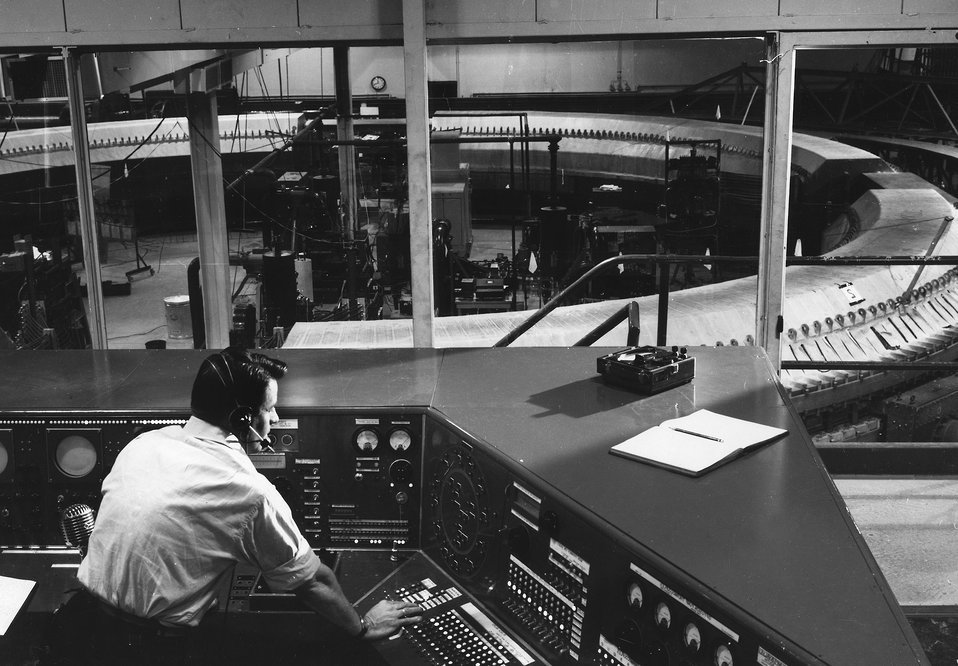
General view of the Cosmotron from the main control console. Equipment in the center of the ring is mainly vacuum gear. (Personnel - E. Maher). c. 1952